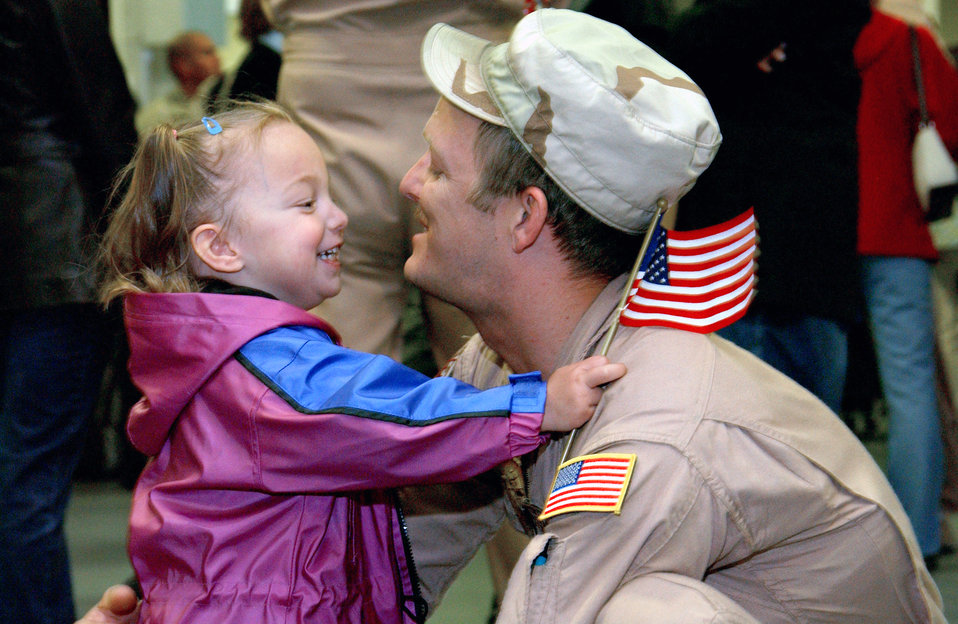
Hugs for dad

TRAVIS AIR FORCE BASE, Calif. (AFPN) - Tech. Sgt. Darren Stewart greets his daughter, Sydney. Homecoming day, April 29, was also the day of Sydney's third birthday. Stewart is a fight engineer in the 6th Air Refueling Squadron here. More than 100 Travis airmen returned home after being deployed supporting Operation Iraqi Freedom.